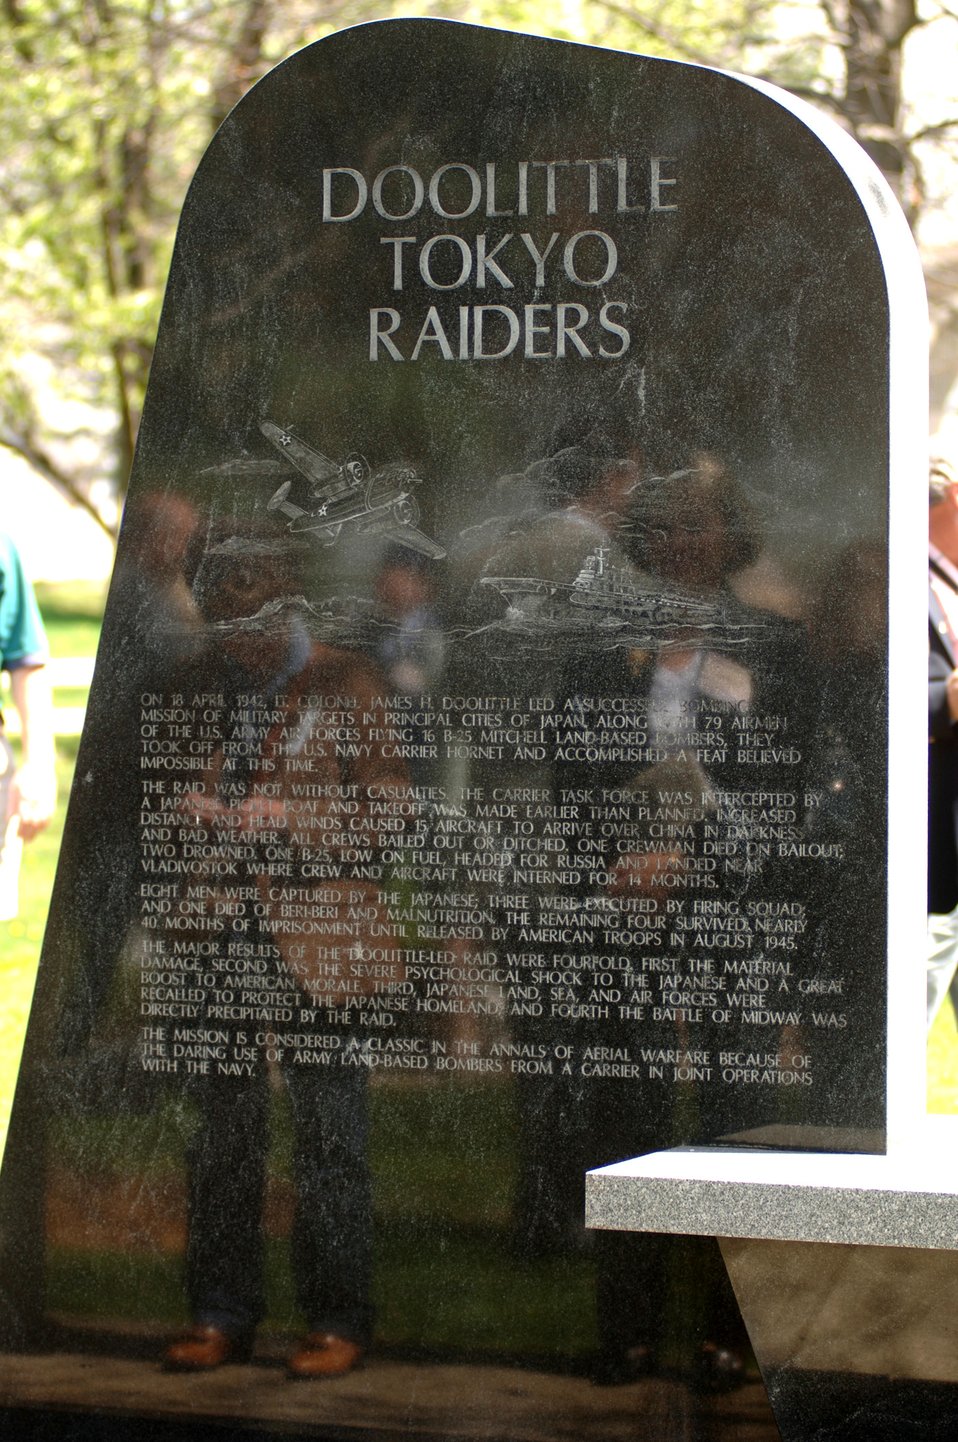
Doolittle Raiders celebrate 64th reunion

Friends and family of the Doolittle Raiders are reflected on a memorial marble tablet dedicated to the 80 men who flew with Lt. Col. James H. Doolittle on the successful Tokyo Raid of April 18, 1942. The Doolittle Raiders celebrated their 64th reunion in Dayton, Ohio, on Tuesday, April 18, 2006.